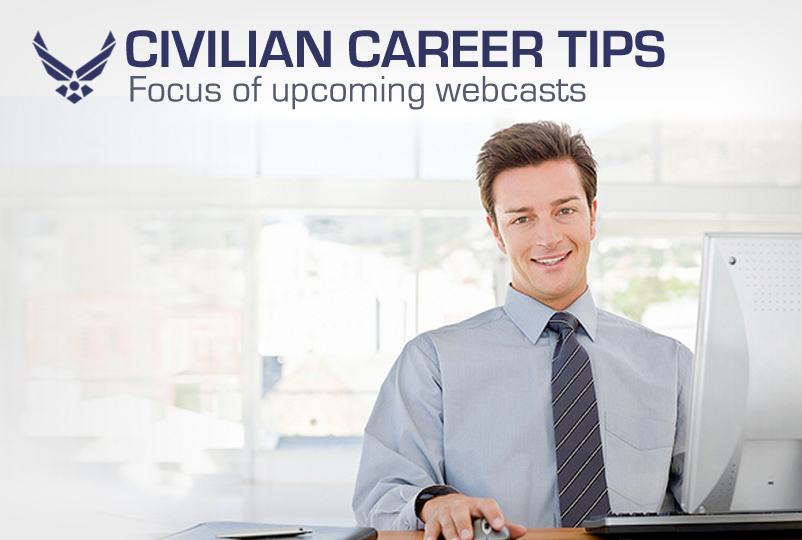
Civilian Career Tips